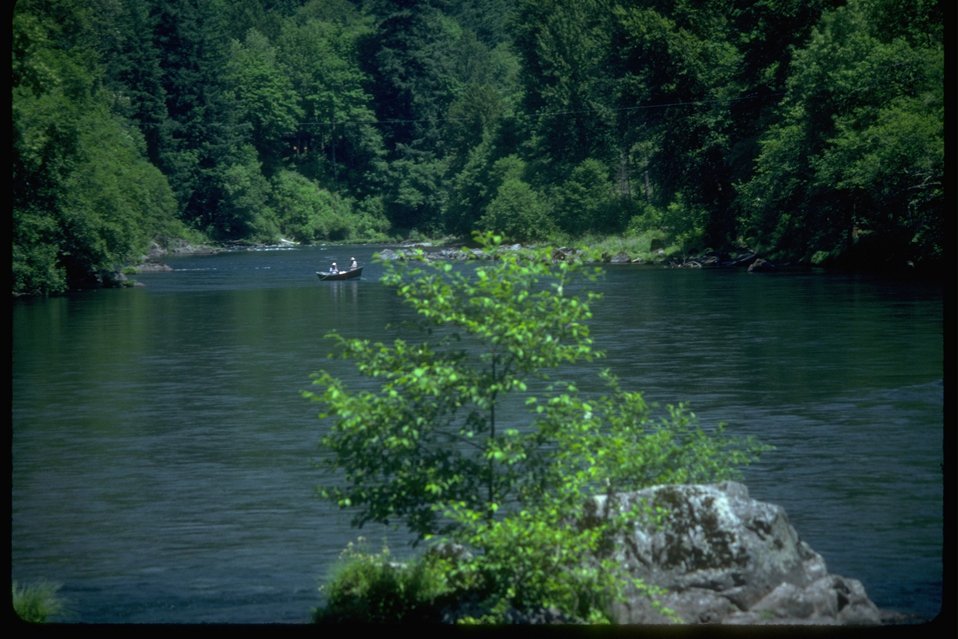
Drift boat on the Siuslaw River.